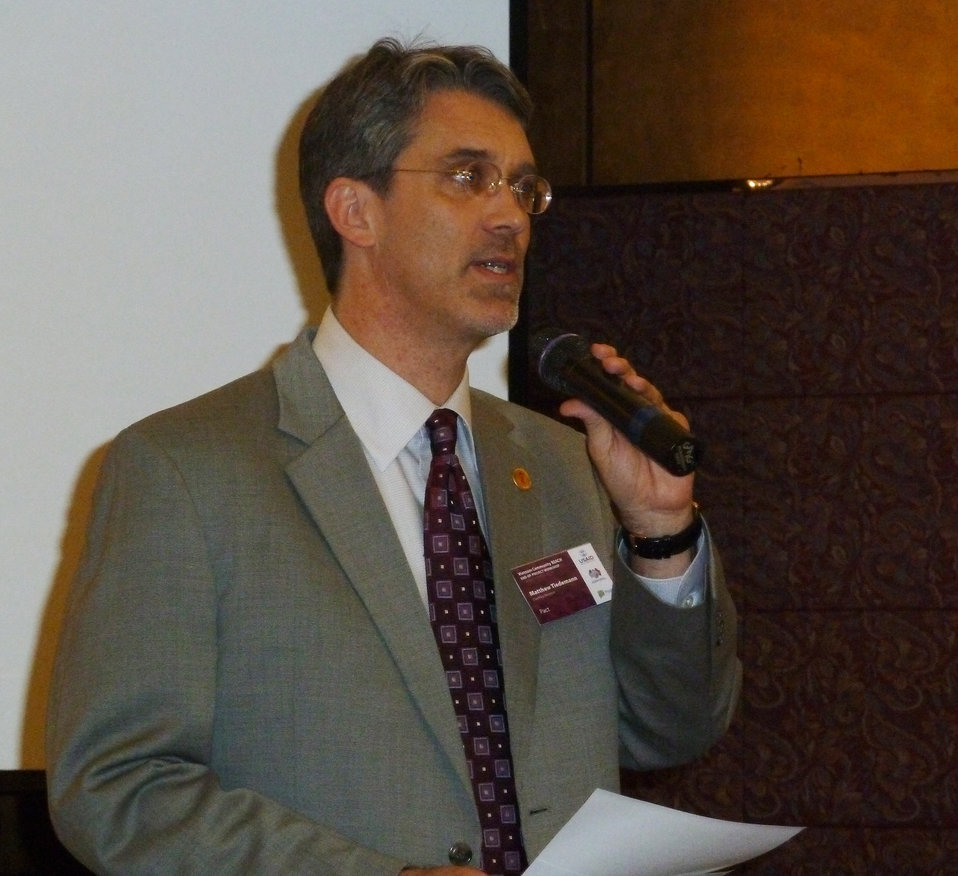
Pact Country Director Matthew Tiedemann presents results at the Community REACH workshop

Community REACH project close-out with USAID and implementing partner, Pact